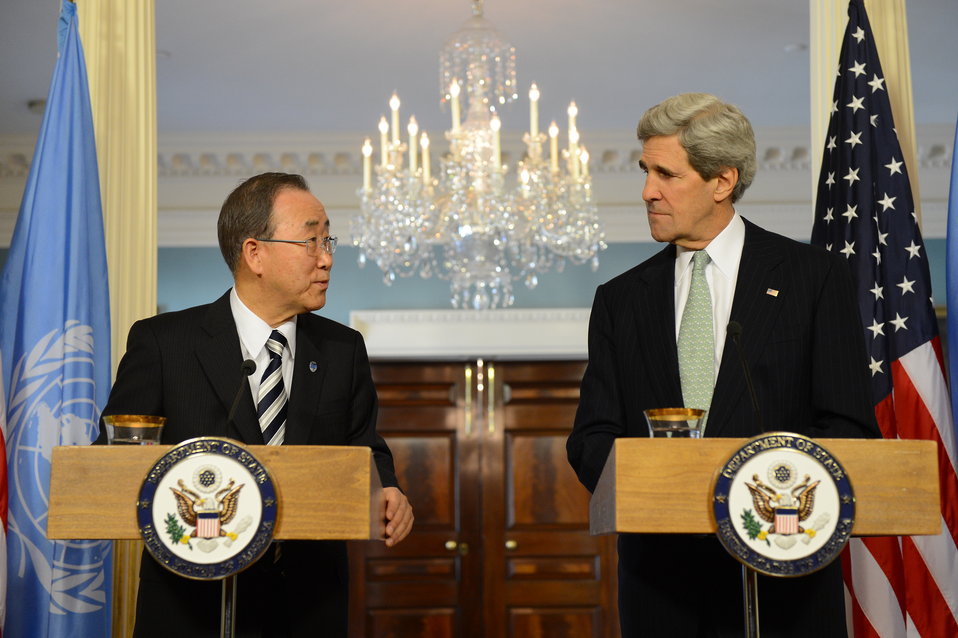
Secretary Kerry and UN Secretary General Ban Ki-moon Address Reporters

U.S. Secretary of State John Kerry and United Nations Secretary General Ban Ki-moon address reporters after their bilateral meeting at the U.S. Department of State in Washington, D.C., February 14, 2013.